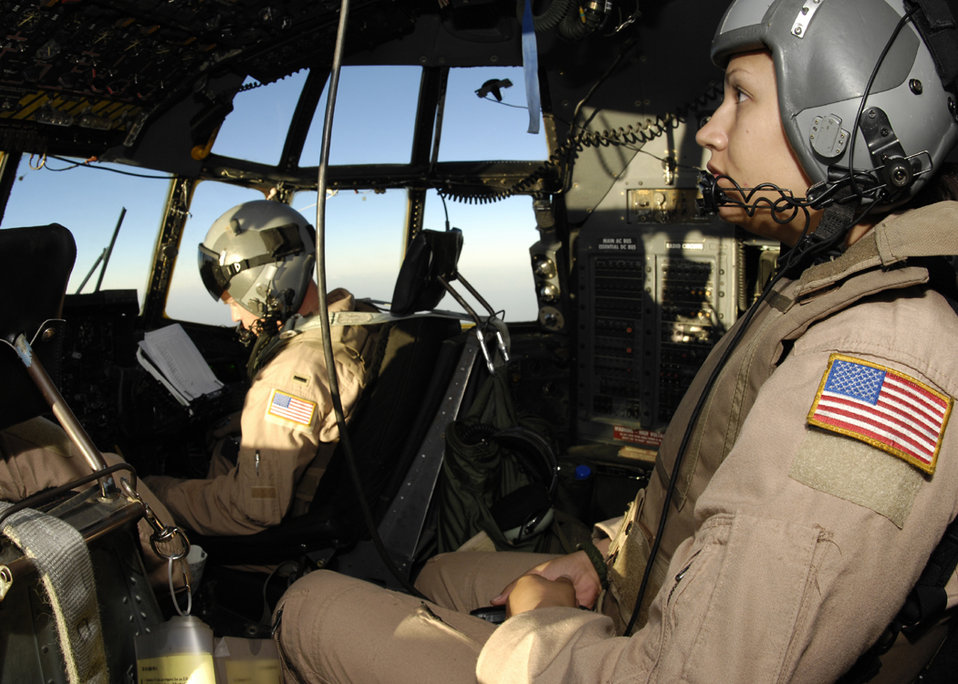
Dec. 7 airpower summary: C-130s keep mission moving

Staff Sgt. Amanda Murdock, a C-130 Hercules flight engineer, monitors various aircraft systems while in flight. Sergeant Murdock is with the 40th Expeditionary Airlift Squadron at an air base in Southwest Asia. The squadron transports passengers and cargo, performs airdrops of equipment and supplies and conducts aeromedical evacuation missions in support of operations Enduring and Iraqi Freedom.